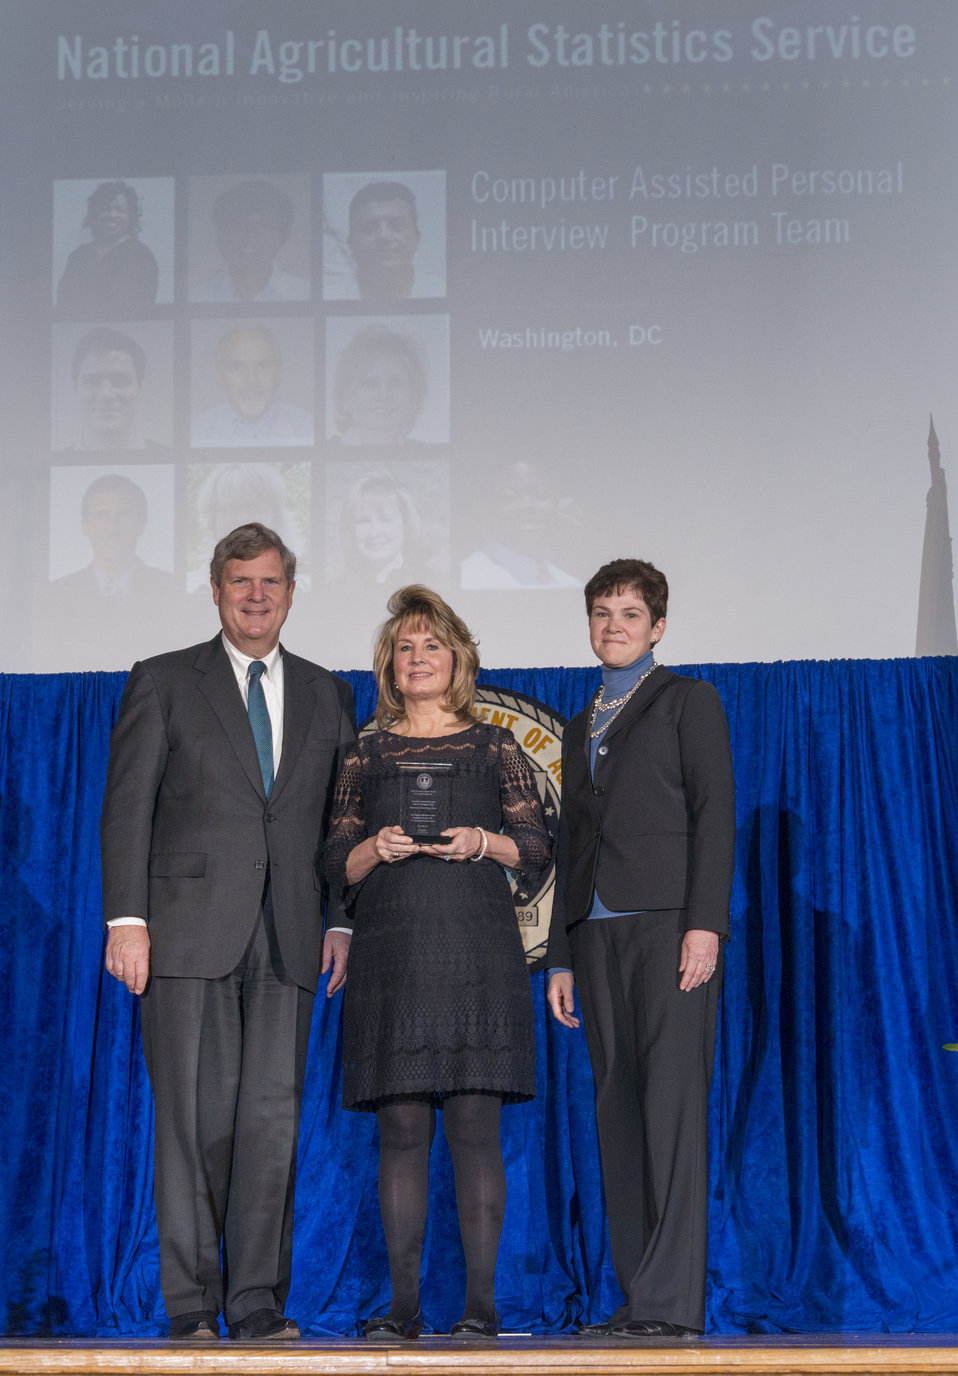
Agriculture Secretary Tom Vilsack and Agriculture Deputy Secretary Krysta Harden present the Secretary’s Honor Award to Computer Assisted Personal Interview Program Team, National Agricultural Statistics Service (NASS), in Washington, D.C. Group leader Pamela K. Hird for innovation and ingenuity in deploying mobile technology to centralize structures and systems, reduce resource requirements, and flexibly meet NASS and the U.S. Department of Agriculture (USDA) business needs at the 2013 Honor Awards in the Jefferson Auditorium at USDA in Washington, D.C. on Wednesday, Dec. 11, 2013.